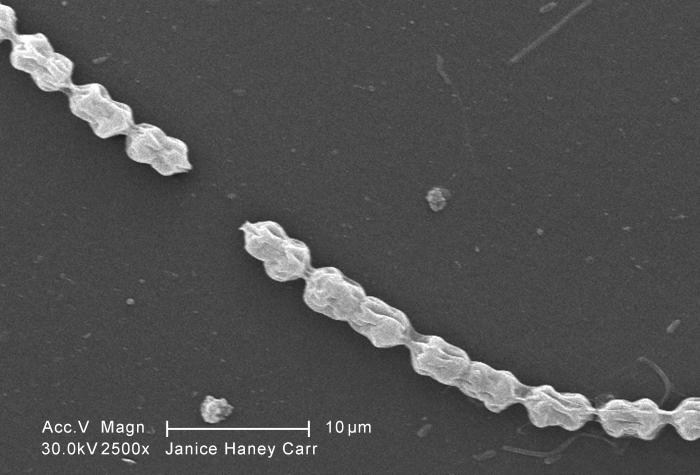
This scanning electron micrograph (SEM) of an untreated water specimen extracted from a wild stream mainly used to control flooding during inclement weather, revealed the presence of unidentified organisms, which included bacteria, protozoa, and algae. In this particular image, a filamentous chain of what appears to be a specie of green aglae known as Bulbochaete. Note what appeared to be one of this specie's characteristic 'hair cells' on the right. The wrinkled appearance of this specimen may have been artifactual, brought on by having been processed prior to its examination under the electron microscope. See PHIL 11696 for a colorized version of this image.